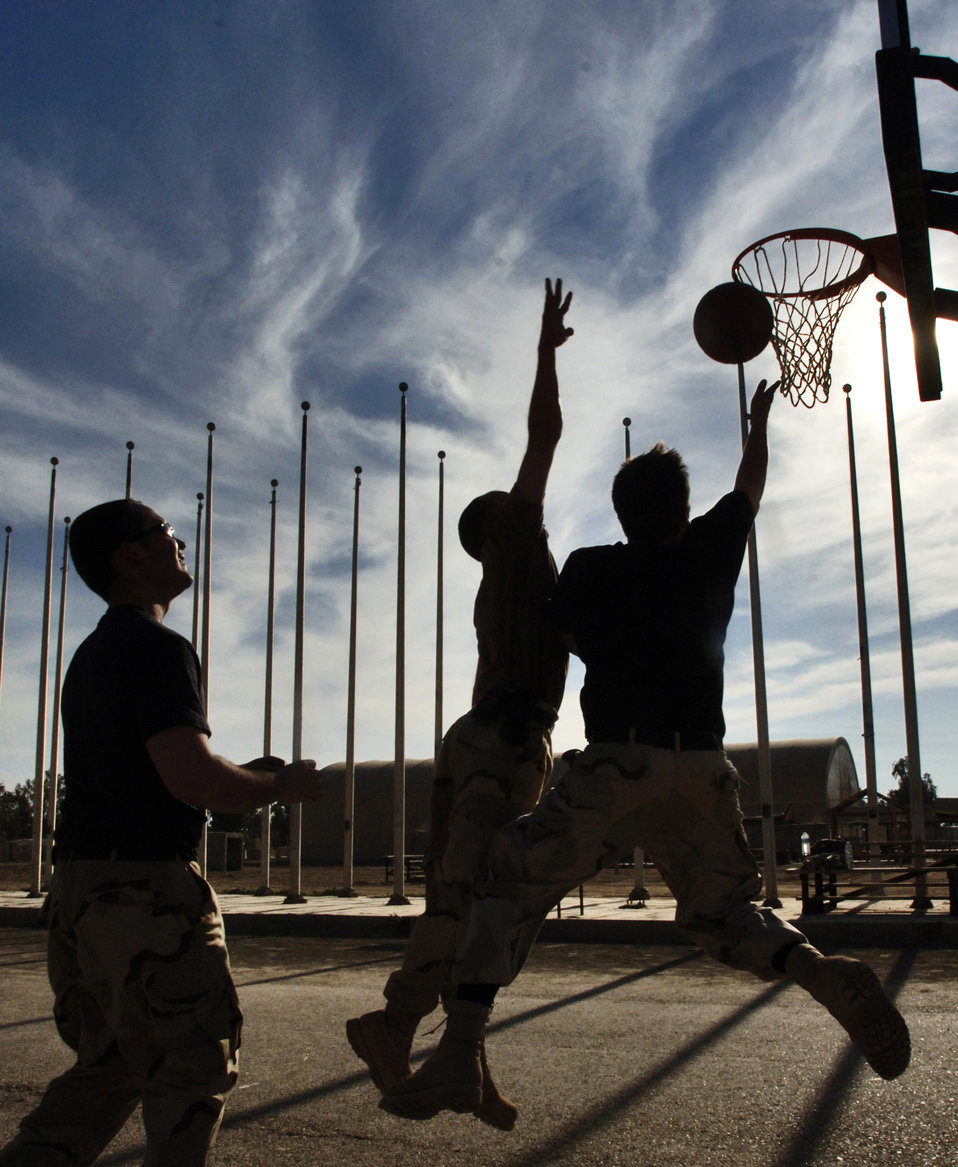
PT break

Staff Sgt. Steven Smith watches as Staff Sgt. Billy Vernor tries to thwart Airman 1st Class Todd Malone's lay-up. They were taking a physical training break from their work with the 447th Expeditionary Civil Engineer Squadron at Sather Air Base, Iraq.